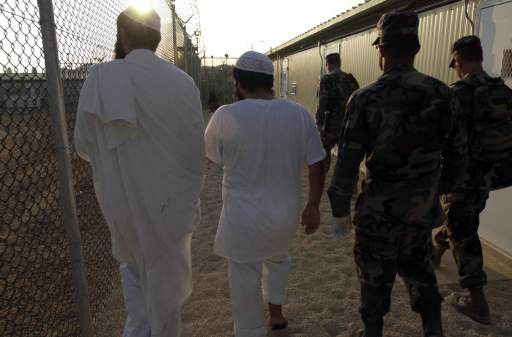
Joint Task Force-Guantanamo

U.S. NAVAL BASE GUANTANAMO BAY, Cuba -- Detainees are shown to their new living quarters in a medium-security facility here. A handful of airmen are among those supporting Joint Task Force-Guantanamo charged with supporting the detainee mission.